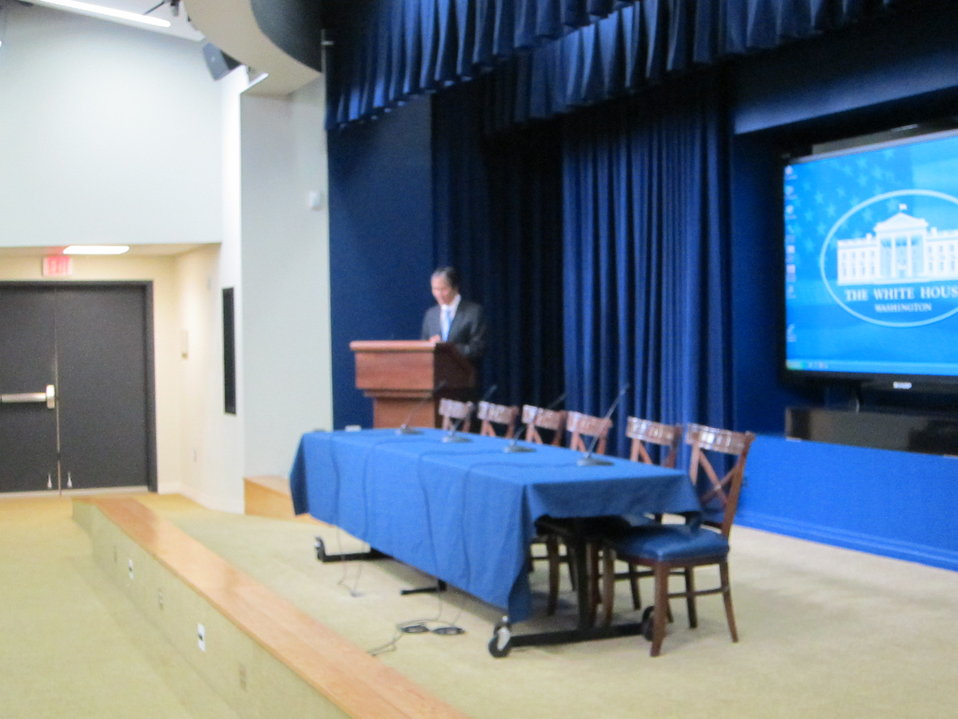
WH 2012 World Hepatitis Day Event